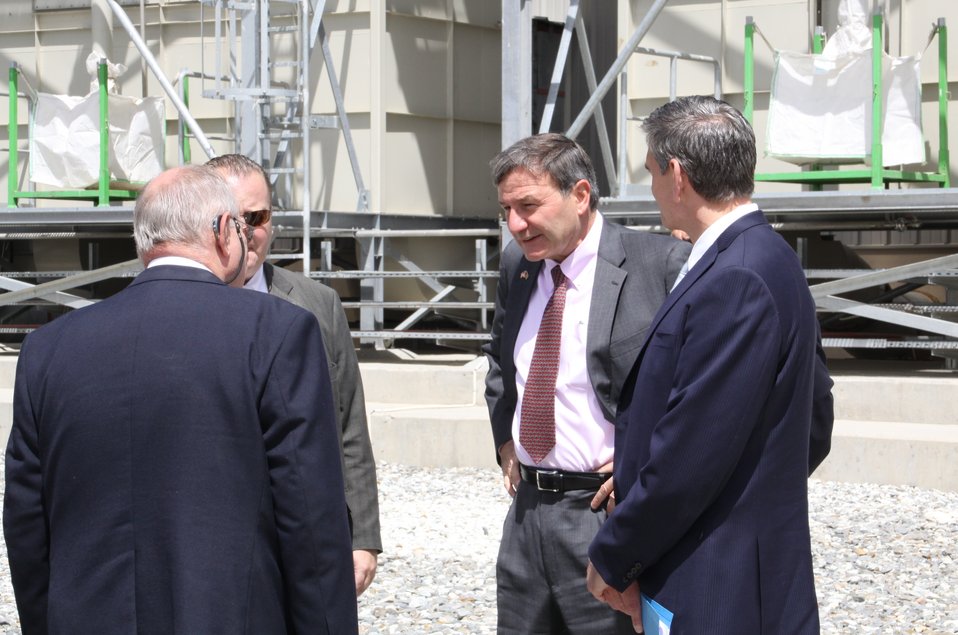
105 MW Tarakhil Power Plant Handover